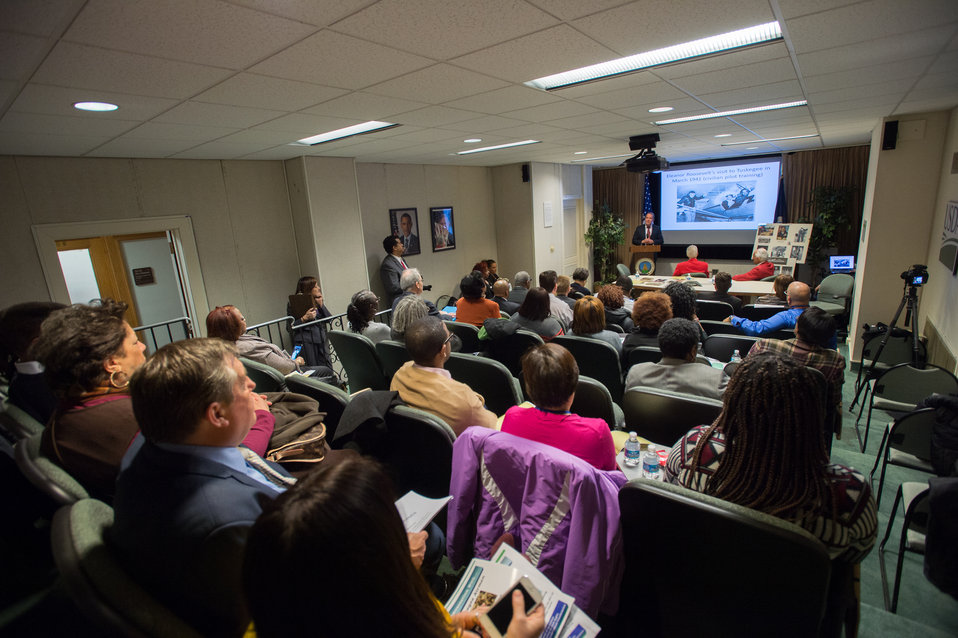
The U.S. Department of Agriculture (USDA) Office of the Assistant Secretary for Civil Rights (OASCR) hosts “In conversation With Tuskegee Airmen” to honor the airmen’s successes both overseas and at home, at USDA in Washington, D.C. on Thursday Mar. 27, 2014.